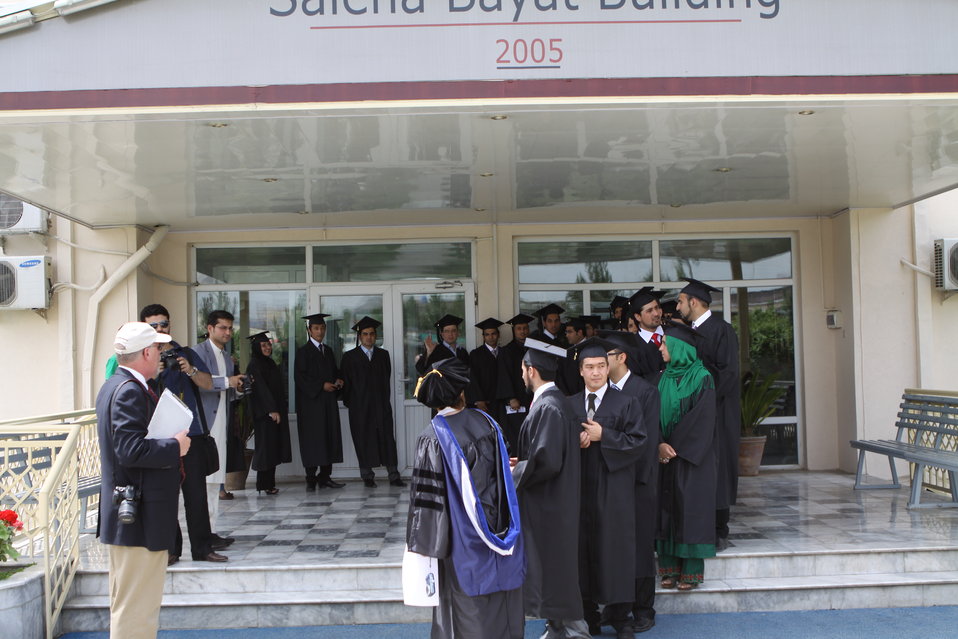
100526 AUAF Graduation 091